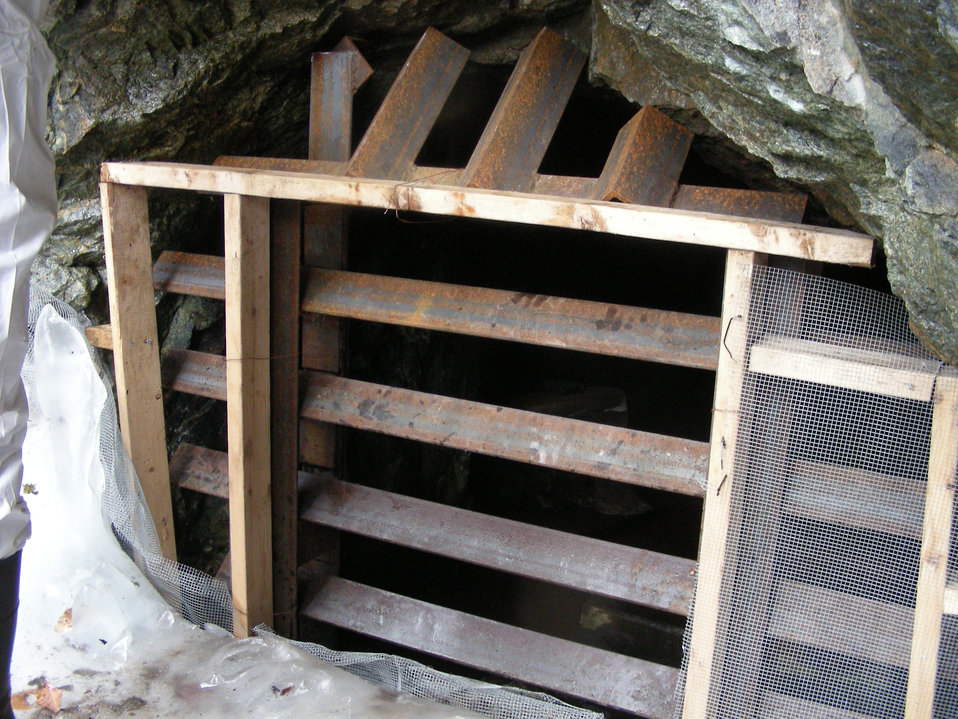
Bat gate at mine entrance

The entrance to Greeley Mine, Vermont, March 26, 2009.